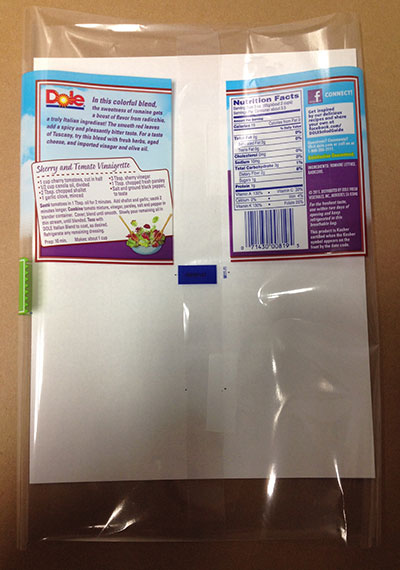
RECALLED – Variety of Bagged salads

March 13, 2014 – Product Recall – Dole Fresh Vegetables Voluntarily Recalls Limited Number of Bagged Salads Due to Possible Health Risk.